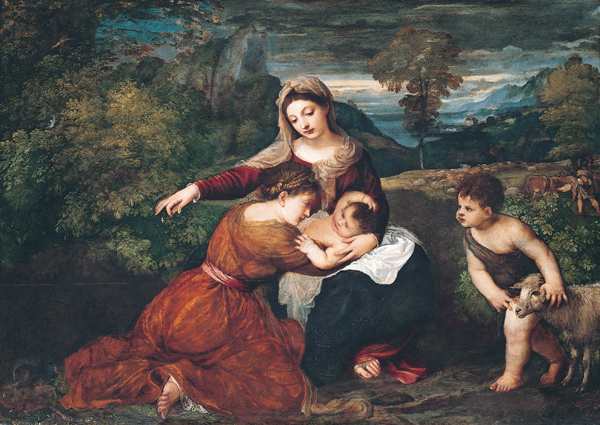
'The Madonna and Child with a Female Saint and the Infant Saint John the Baptist', oil on panel painting by Titian